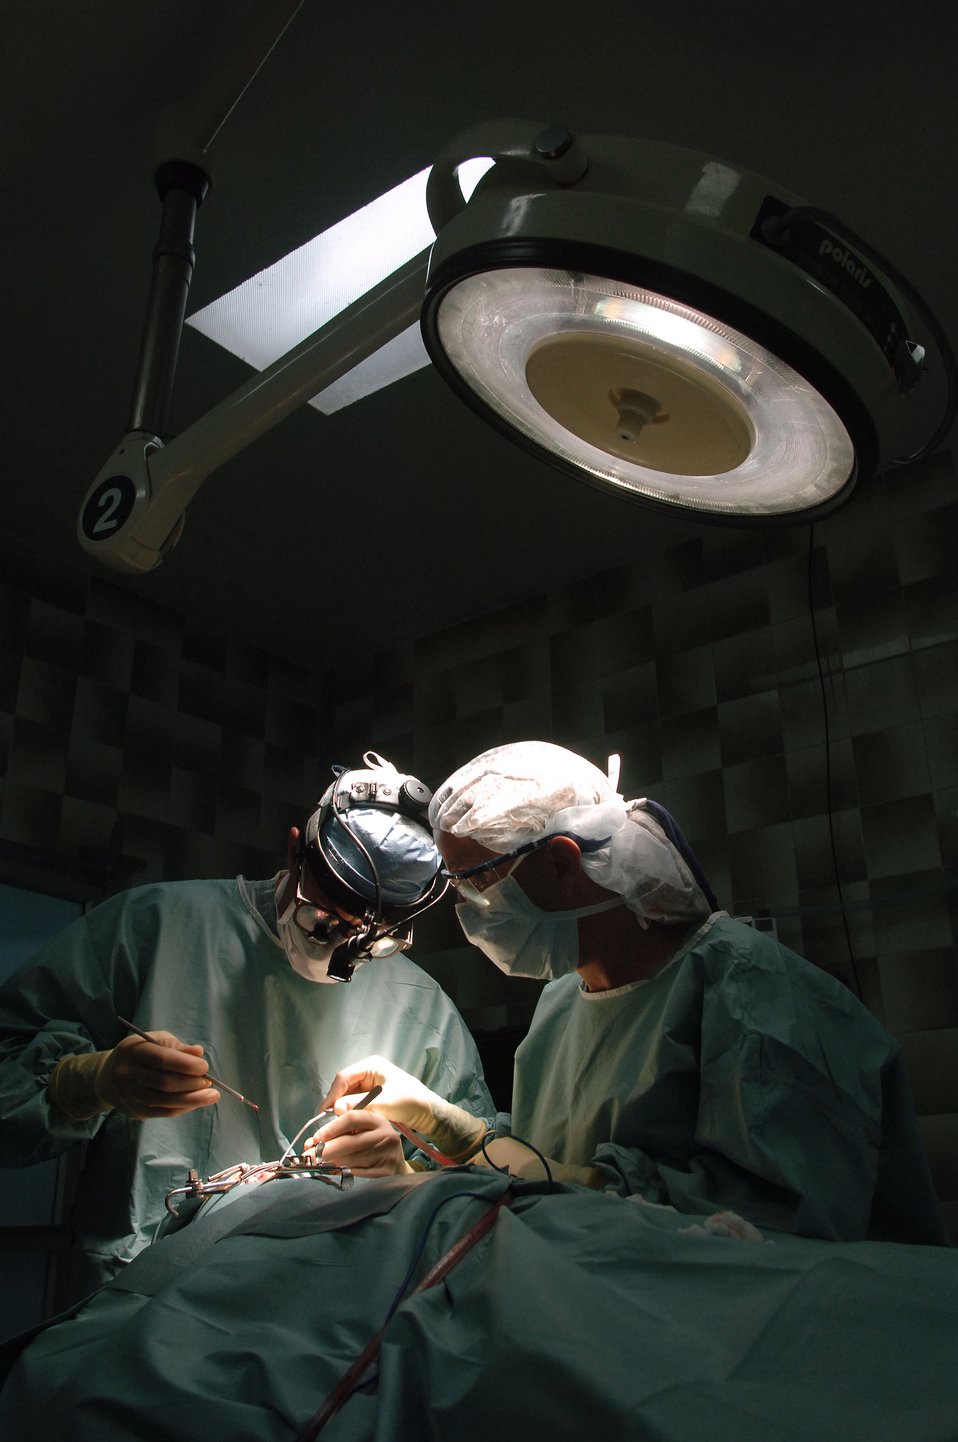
Air Force medics conduct plastic surgery clinic

CUENCA, Ecuador -- Maj. (Dr.) Ted Ferguson (left) and Master Sgt. Kelly Mathis reconstruct a cleft lip at the military hospital here. A seven-person plastic surgery team from Wilford Hall Medical Center at Lackland Air Force Base, Texas, is providing free corrective surgeries to Ecuadorian civilians as part of a 12-day medical readiness training exercise.